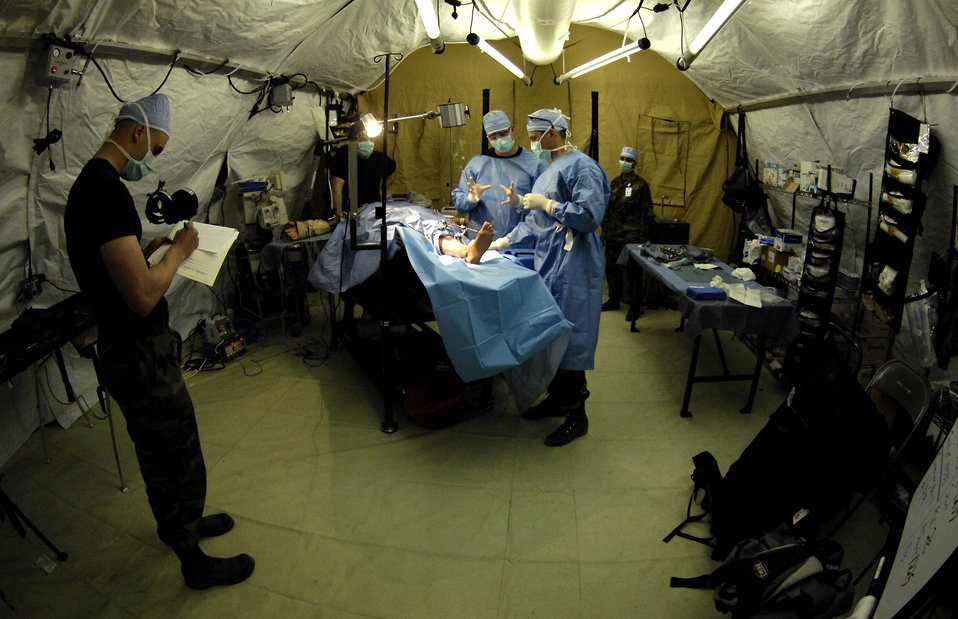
Providing a lifeline

Medics go through an operation scenario during Exercise Pacific Lifeline Feb. 5 at Kona International Airport, Hawaii. The Airmen are from the 3rd Medical Group from Elmendorf Air Force Base, Alaska. Pacific Lifeline is a total force exercise staging from three locations within the Hawaiian Islands. It provides approximately 900 Department of Defense members a test environment to rapidly deploy and provide time-critical services in the wake of a simulated natural disaster.